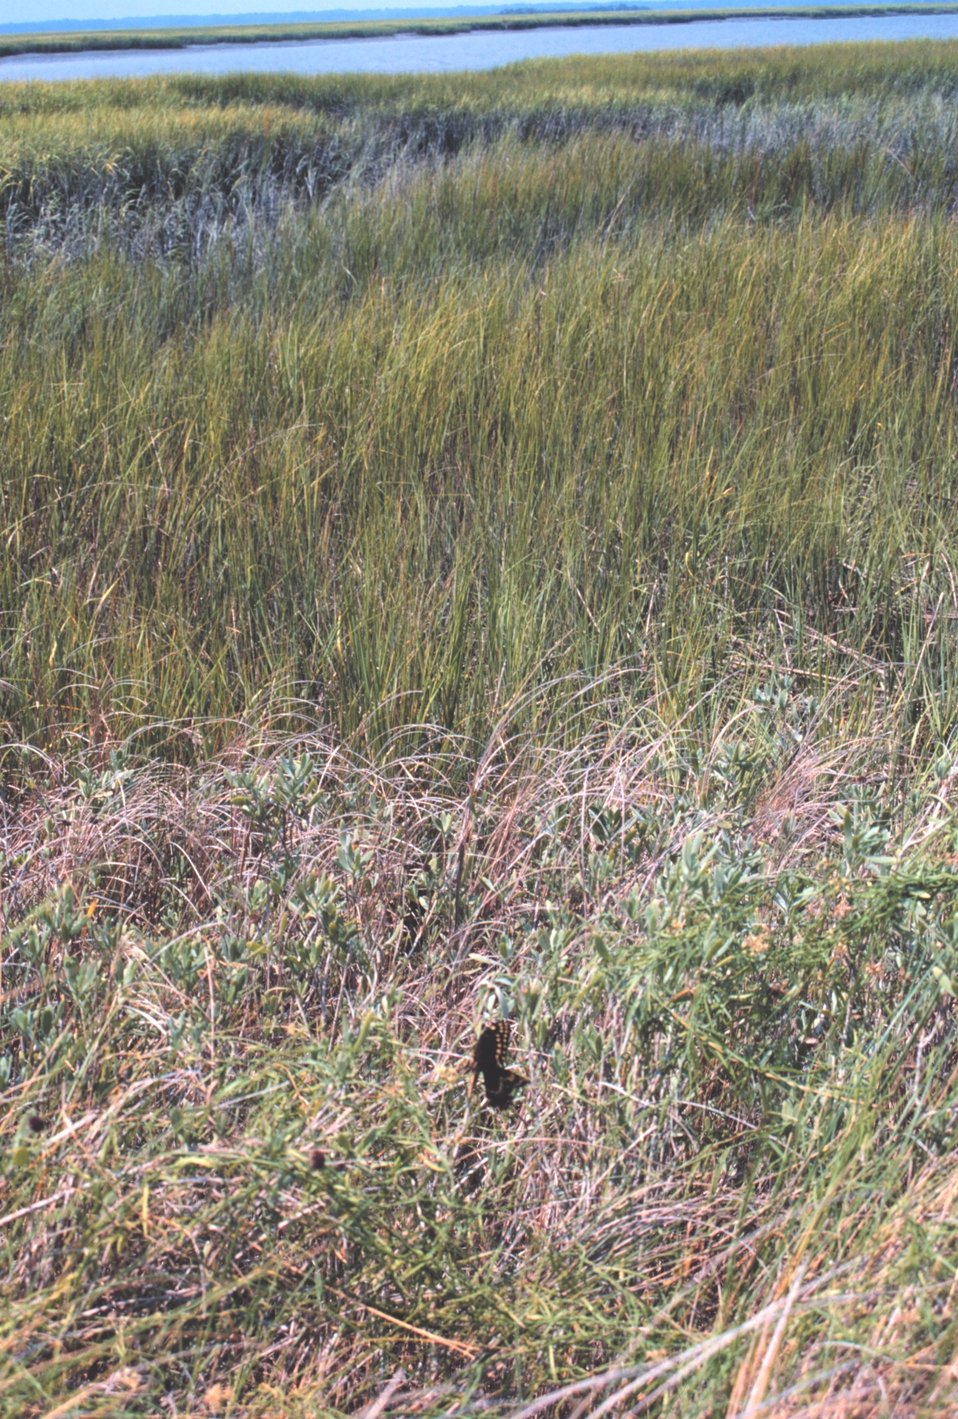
Sea grass and marsh